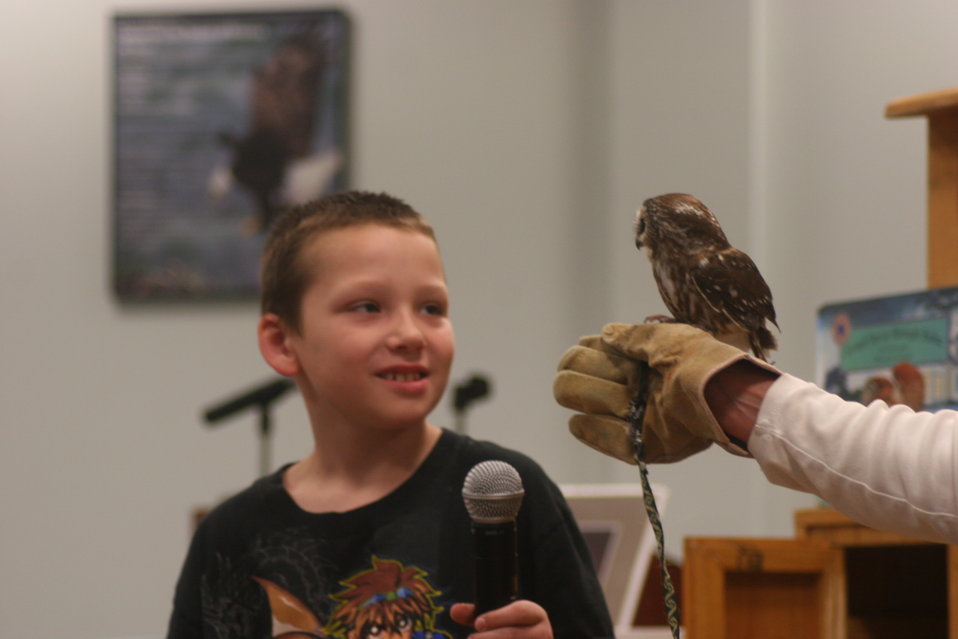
Saw Whet Owl

Live bird demonstration